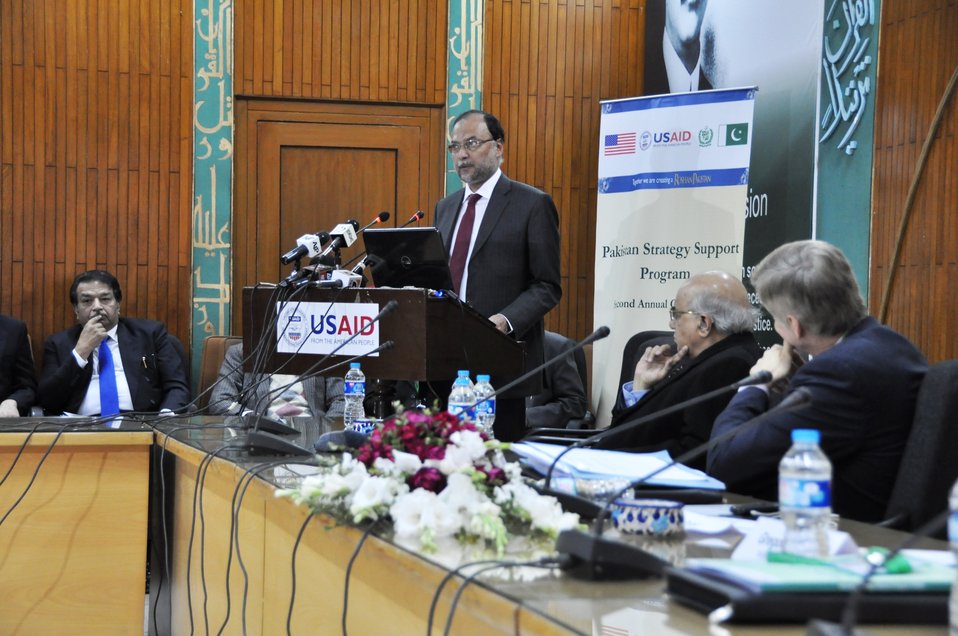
Jan 21, 2014- PSSP Event in Islamabad

Prof. Ahsan Iqbal, Federal Minister for Planning, Development and Reforms and Deputy Chairman of the Planning Commission while addressing the participants at the event.